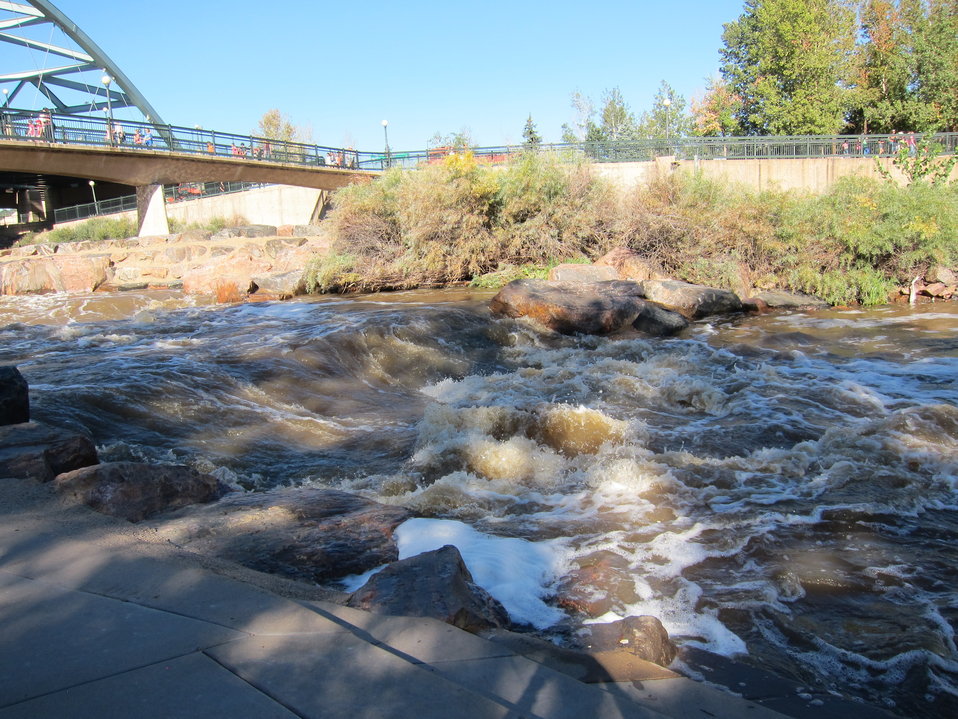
September 18, 2013 - South Platte River at Confluence Park, Denver, CO

Due to the recent severe flooding in Colorado, many agencies including EPA will be monitoring water quality for health and safety issues over the next several months. Here, the younger crowd got involved to monitor the water in their Denver backyard. Students from Polaris Elementary and Noel Elementary, along with volunteers from EPA and CH2M Hill took water samples from the South Platte River as part of the World Water Monitoring Challenge.